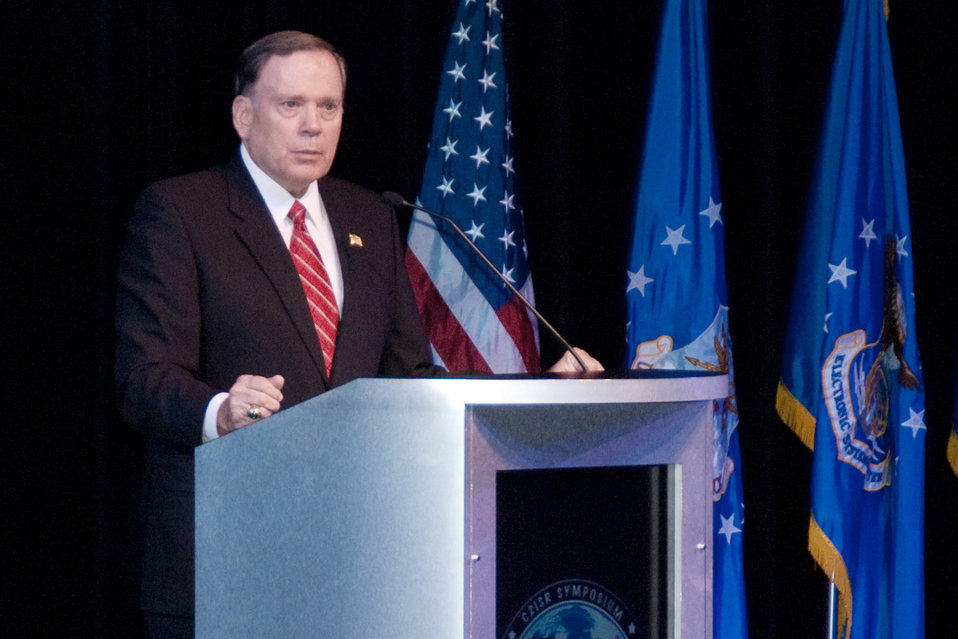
C2ISR Symposium

Former Air Force Chief of Staff Gen. John P. Jumper kicks off the Air Force C2ISR Symposium in Ledyard, Conn., Sept. 28, 2009. Also scheduled to speak at the symposium are Air Force Secretary Michael B. Donley and Chief of Staff Gen. Norton Schwartz.